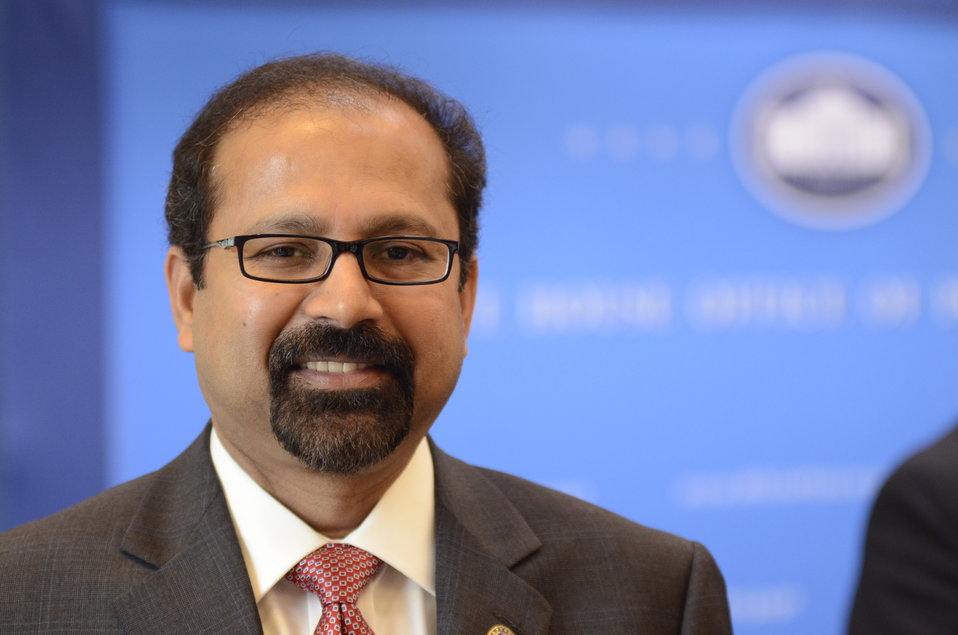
Fort Valley State University (Georgia) College of Agriculture, Family Sciences and Technology Dean and Director Dr. Govind Kannan. is one of eleven honorees recognized for his efforts to reduce hunger and increase food security in the U.S. and internationally at the White House Champions of Change Strengthening Food Security at Home and Abroad Event held at the White House on Thursday, September 6, 2012, in Washington, D.C.